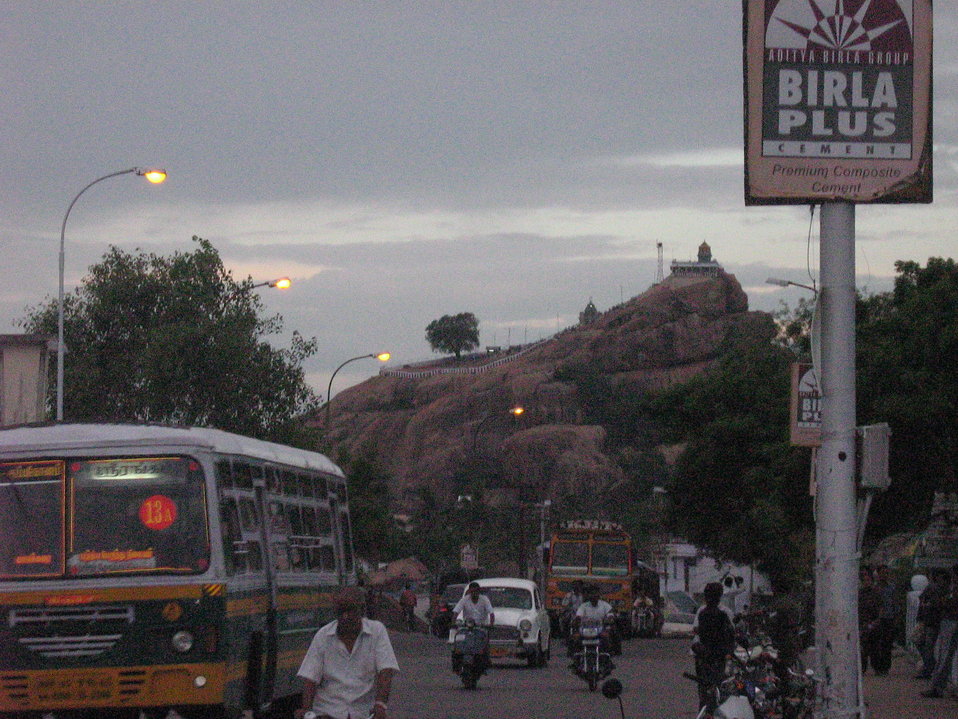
Rockfort or Ucchi Pillayar koil, is a combination of two famous 7th century Hindu temples, one dedicated to Lord Ganesh and the other dedicated to Lord Shiva, located atop a small rock in Trichi, Tamil Nadu